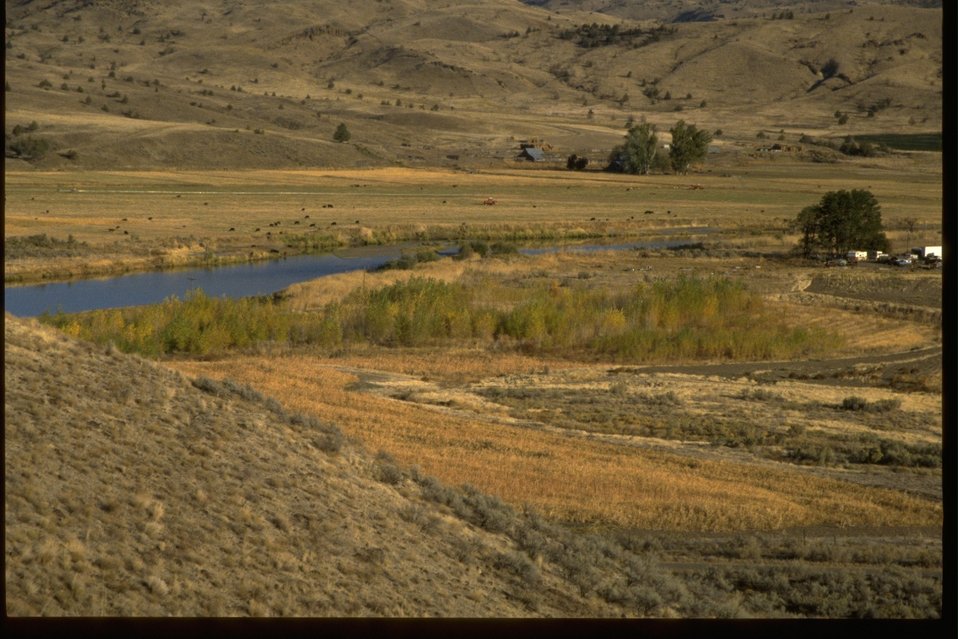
View from hill of BLM Clarno fields, cottonwood orchards, wildlife (grain & sunflower) fields, and the John Day River.